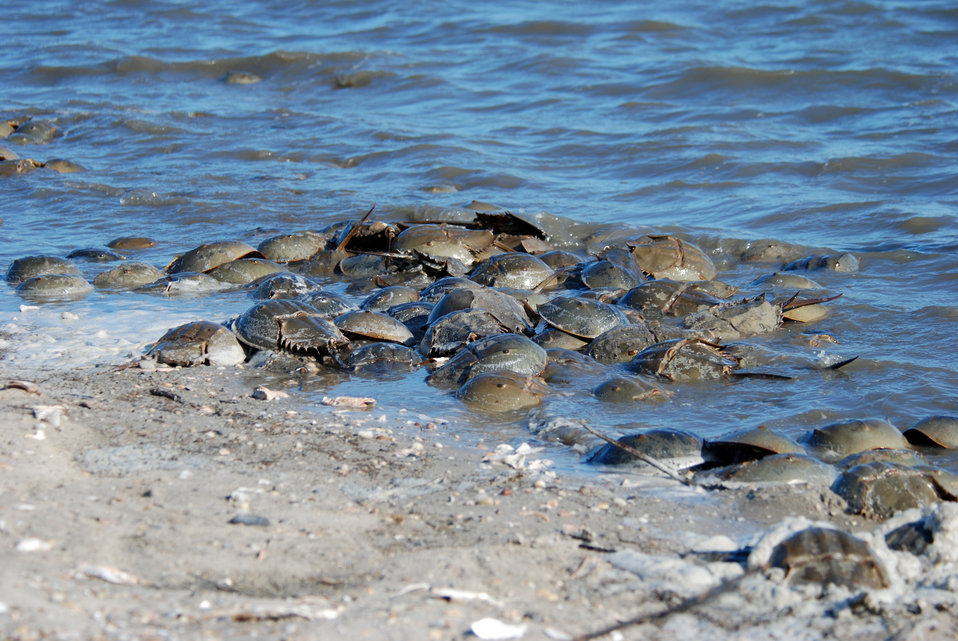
Horseshoe Crab

Mispillion Harbor, Delaware.